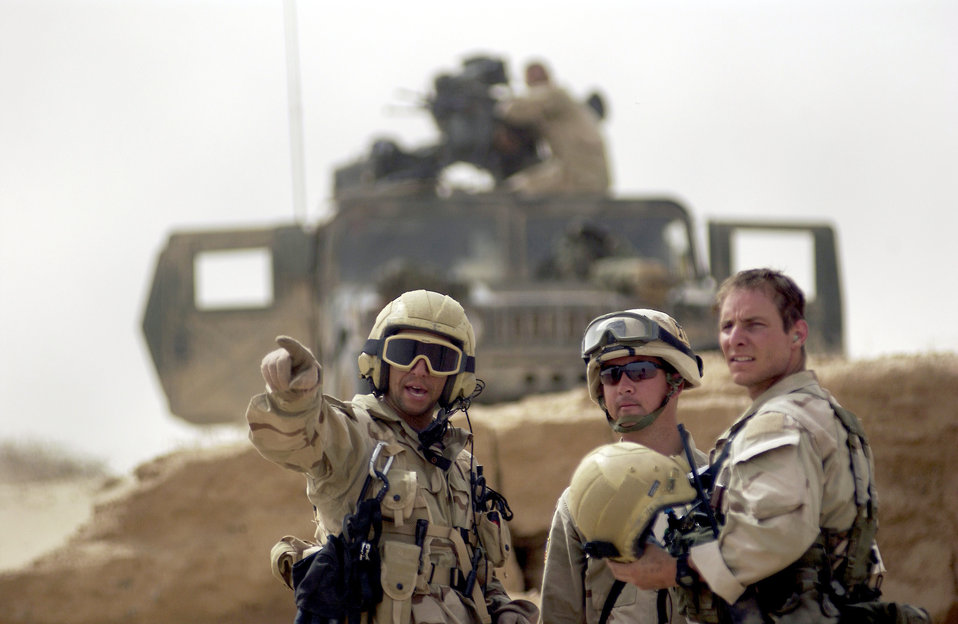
Joint operations

OPERATION IRAQI FREEDOM -- Pararescuemen from the 301st Rescue Squadron talk with a member of the 101st Airborne Division April 6, at a forward deployed location in Iraq during Operation Iraqi Freedom. Operation Iraqi Freedom is multi-national coalition effort to liberate the Iraqi people, eliminate Iraq's weapons of mass destruction and bring an end to the regime of Saddam Hussein.